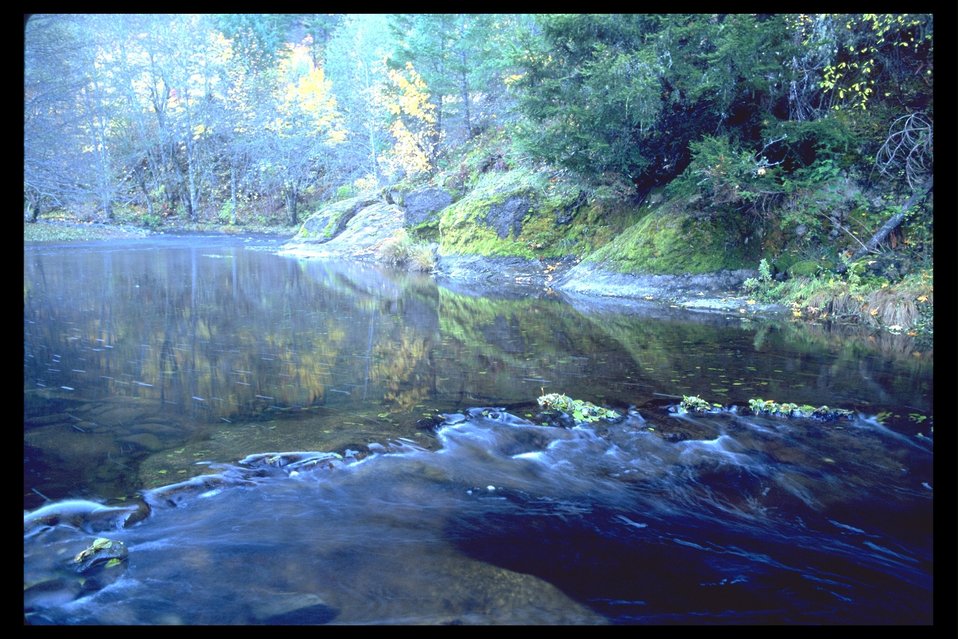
Elk Creek.